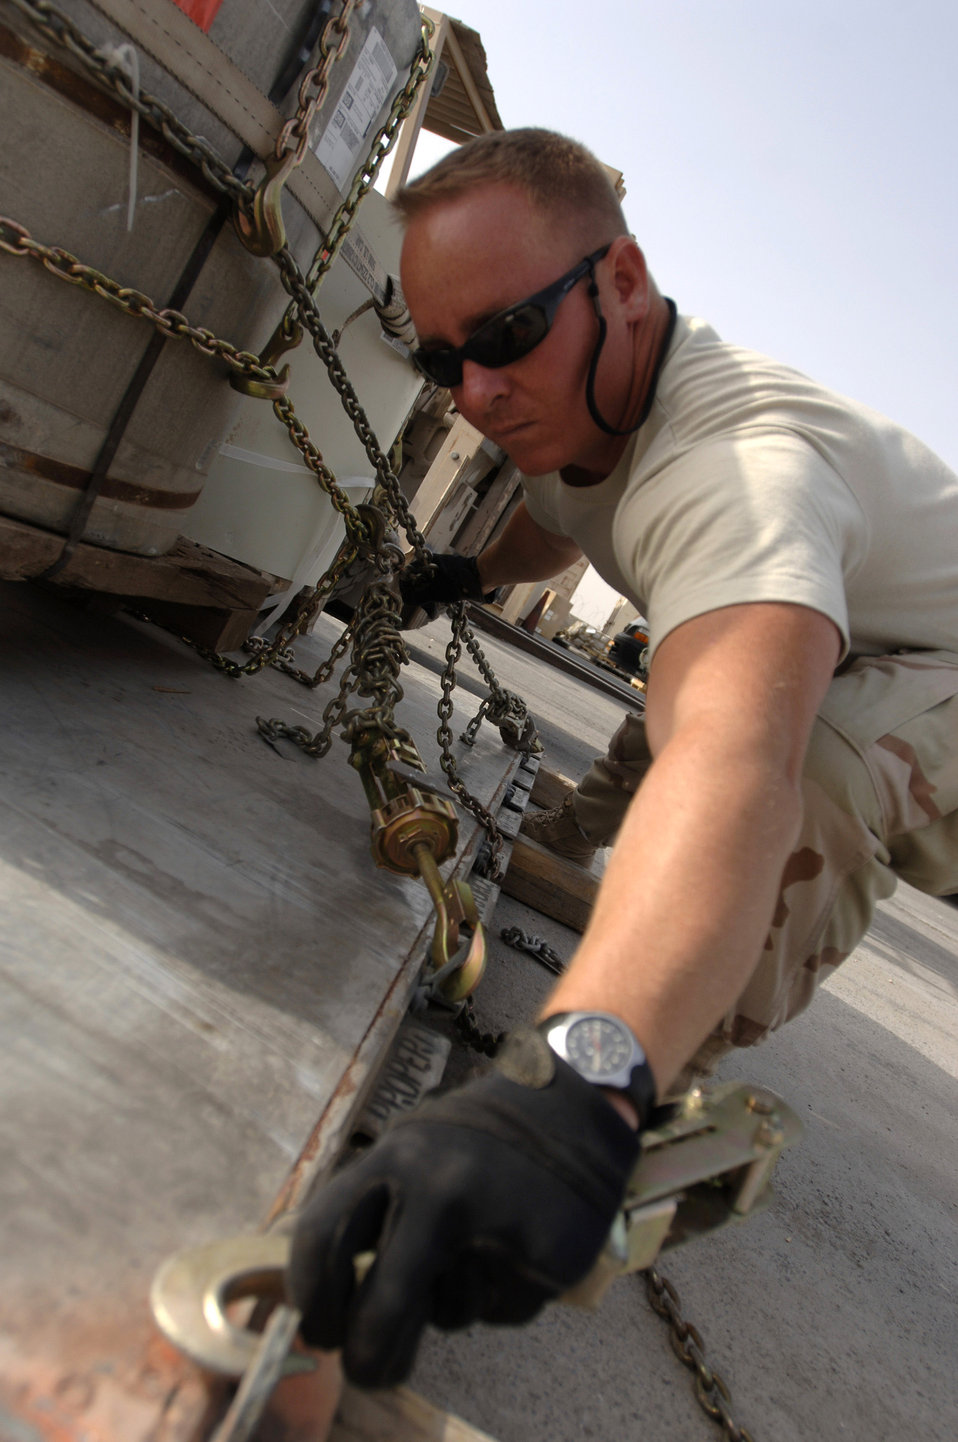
Aerial porters keep the Afghan missions moving

Staff Sgt. Todd Frederick secures military gear onto a pallet. He and other aerial porters load approximately 2.1 million pounds of cargo per week in Southwest Asia. The aerial porter's current mission supports, Operation Achilles, a campaign to create a secure environment and better quality of life for Afghan citizens. Sergeant Frederick is assigned to the 8th Expeditionary Air Mobility Squadron.